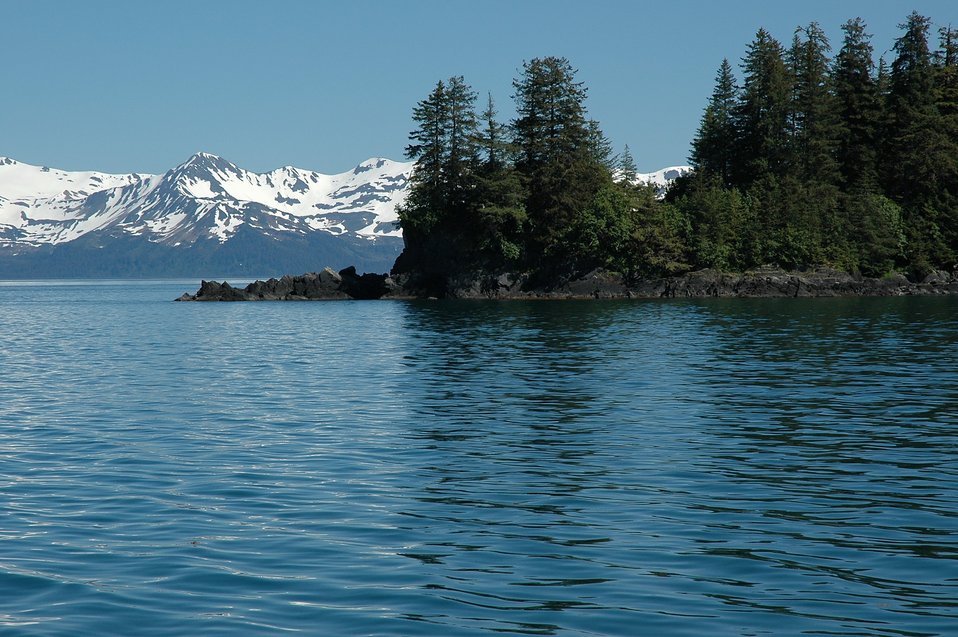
A serene scene at Sleepy Bay